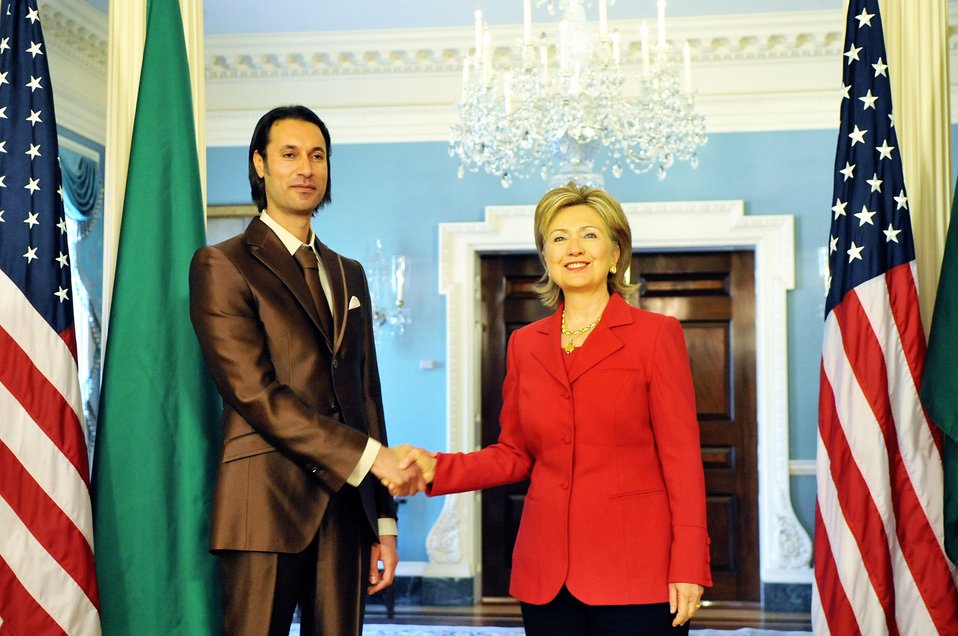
Secretary Clinton Meets With Libyan National Security Advisor

U.S. Secretary of State Hillary Rodham Clinton meets Libyan National Security Advisor Dr. Mutassim Qadhafi at the U.S. Department of State in Washington, DC April 21, 2009.